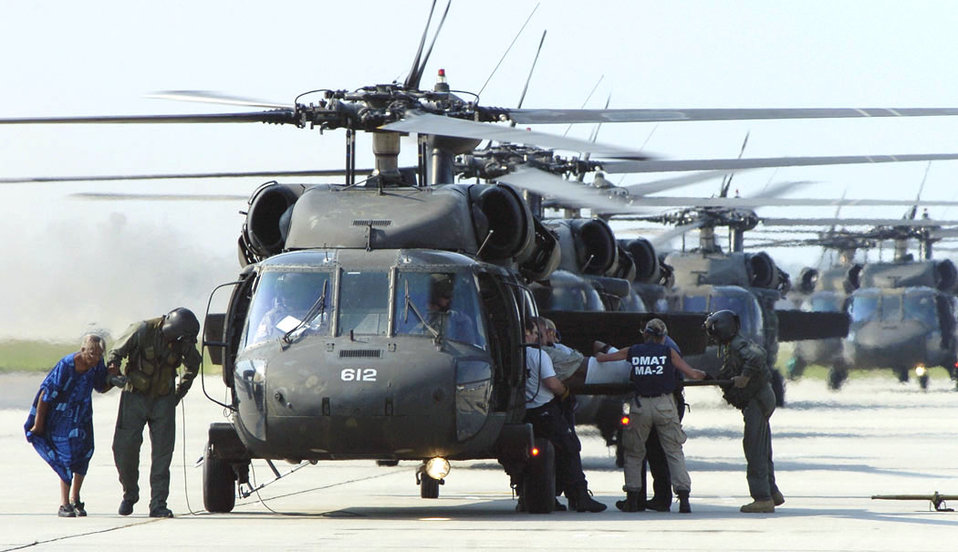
Air Force evacuates the sick and wounded

NEW ORLEANS -- A steady flow of rescue helicopters arrive at the evacuee staging area here Sept. 2. Thousand of victims have been flown here since evacuations began Aug. 31.